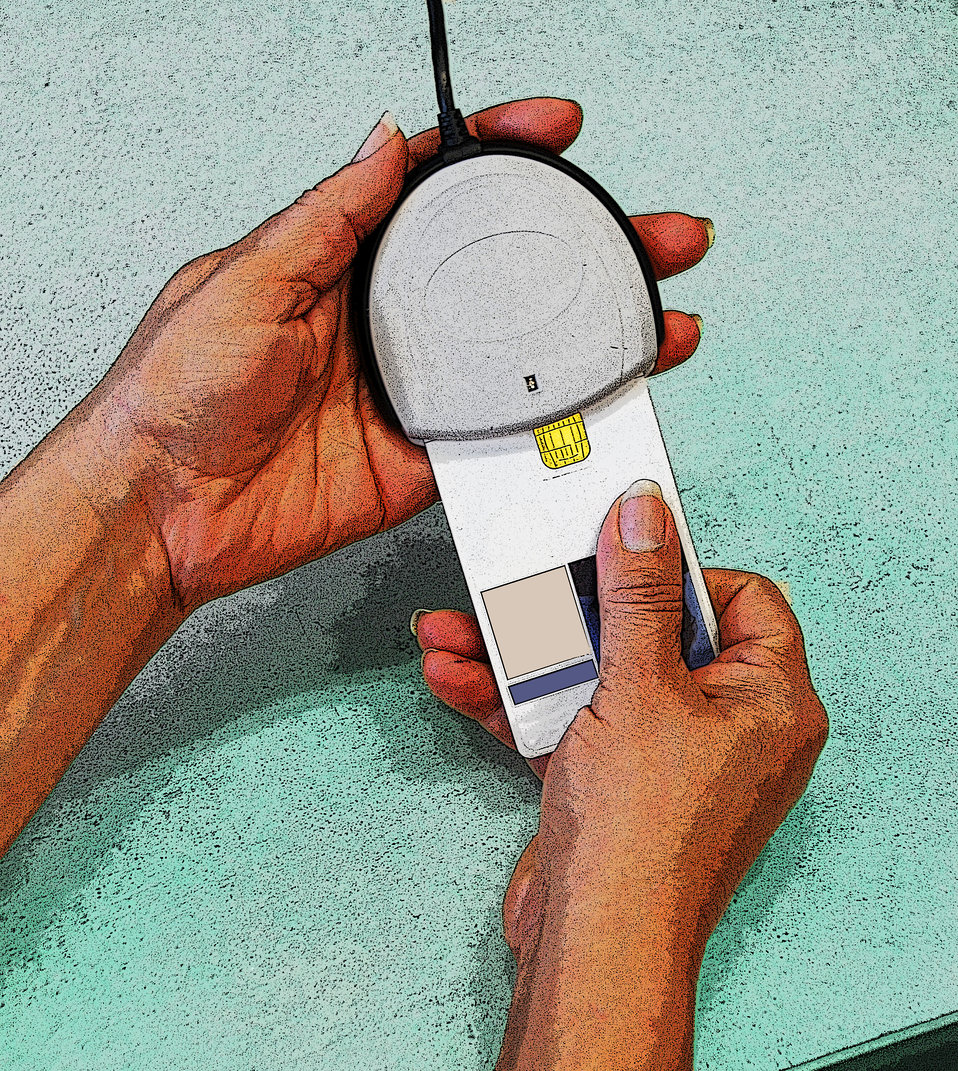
SP 800-53 Rev. 4 identification and authentication controls are met when employees use their government-issued personal identity verification cards to use their computers.